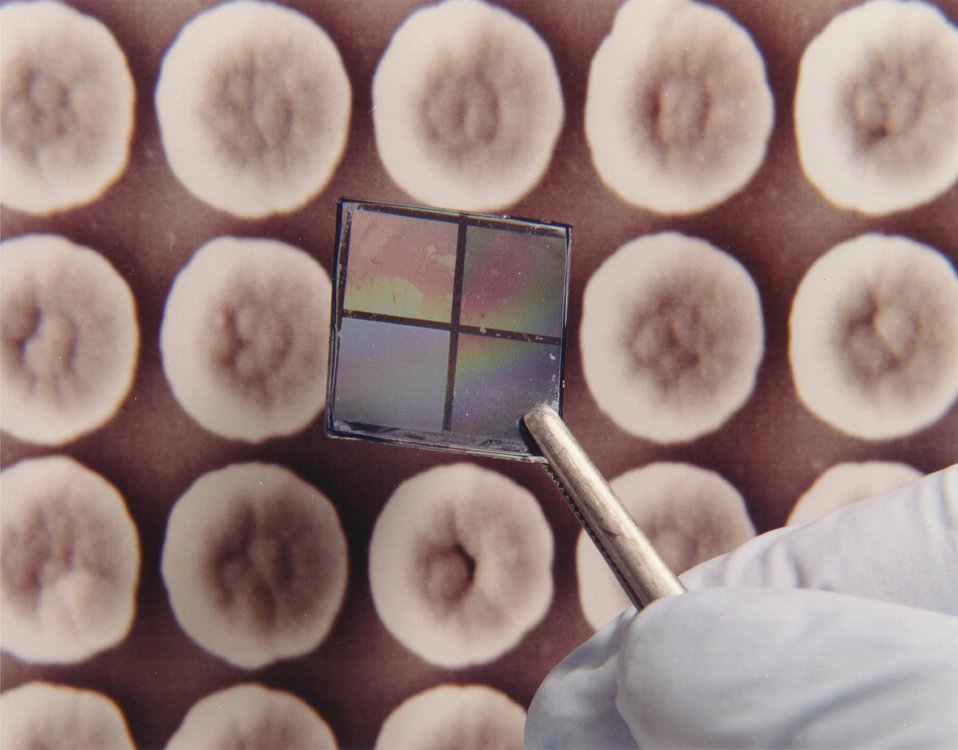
THE SILICON PLATE HOLDS 40,000 DIAMOND FILM DOTS; IN THE BACKGROUND SOME OF THE DOTS ARE MAGNIFIED MILLIONS OF TIMES.

A REVOLUTIONARY METHOD FOR GROWING THE WORLD'S SMOOTHEST AND PUREST DIAMOND FILMS HAS BEEN DEVELOPED AT ARGONNE. THESE ULTRA NANO-CRYSTALLINE DIAMOND FILMS MAY PROVIDE THE BREAKTHROUGH NEEDED TO PUSH MICRO ELECTRO-MECHANICAL SYSTEMS (MEMS) INTO THE COMMERCIAL MAINSTREAM.